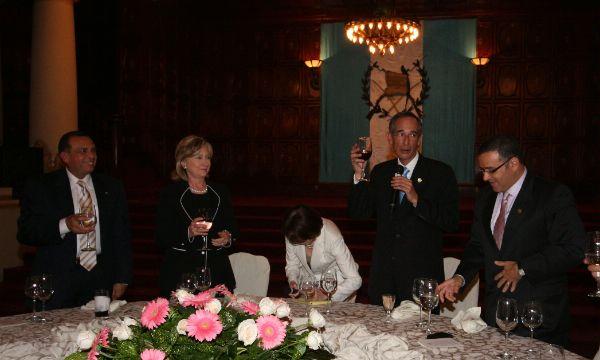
Guatemalan President Colom toasts Secretary Clinton

Guatemalan President Colom toasts U.S. Secretary of State Hillary Rodham Clinton. Also featured in the photo are Honduran President Porfirio Lobo and Salvadoran President Carlos Funes in Guatemala City, Guatemala, March 5, 2010.